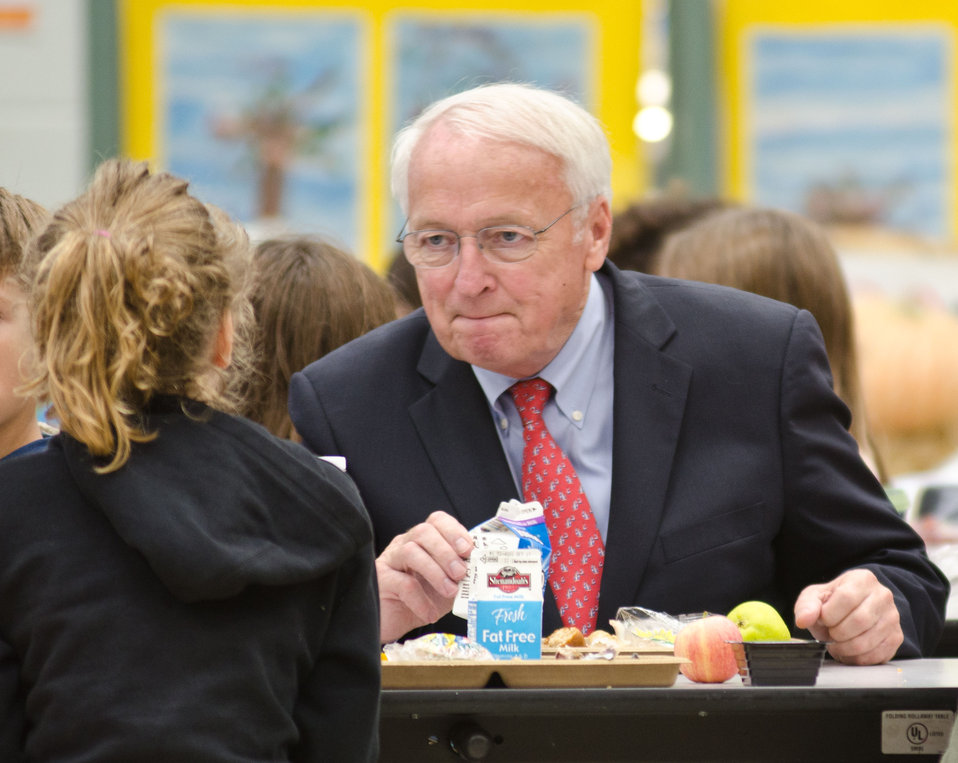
Under Secretary for Food, Nutrition and Consumer Services Kevin Concannon (red tie) spoke with his lunch mates during the school lunch program at Nottingham Elementary School in Arlington, VA, on Wednesday, October 12, 2011. Today's menu included roasted chicken, roasted butternut squash with dried cranberries, farm fresh mixed lettuce salad, turkey wraps, pita wedges, hot muffins, carrots, pears and more choices.